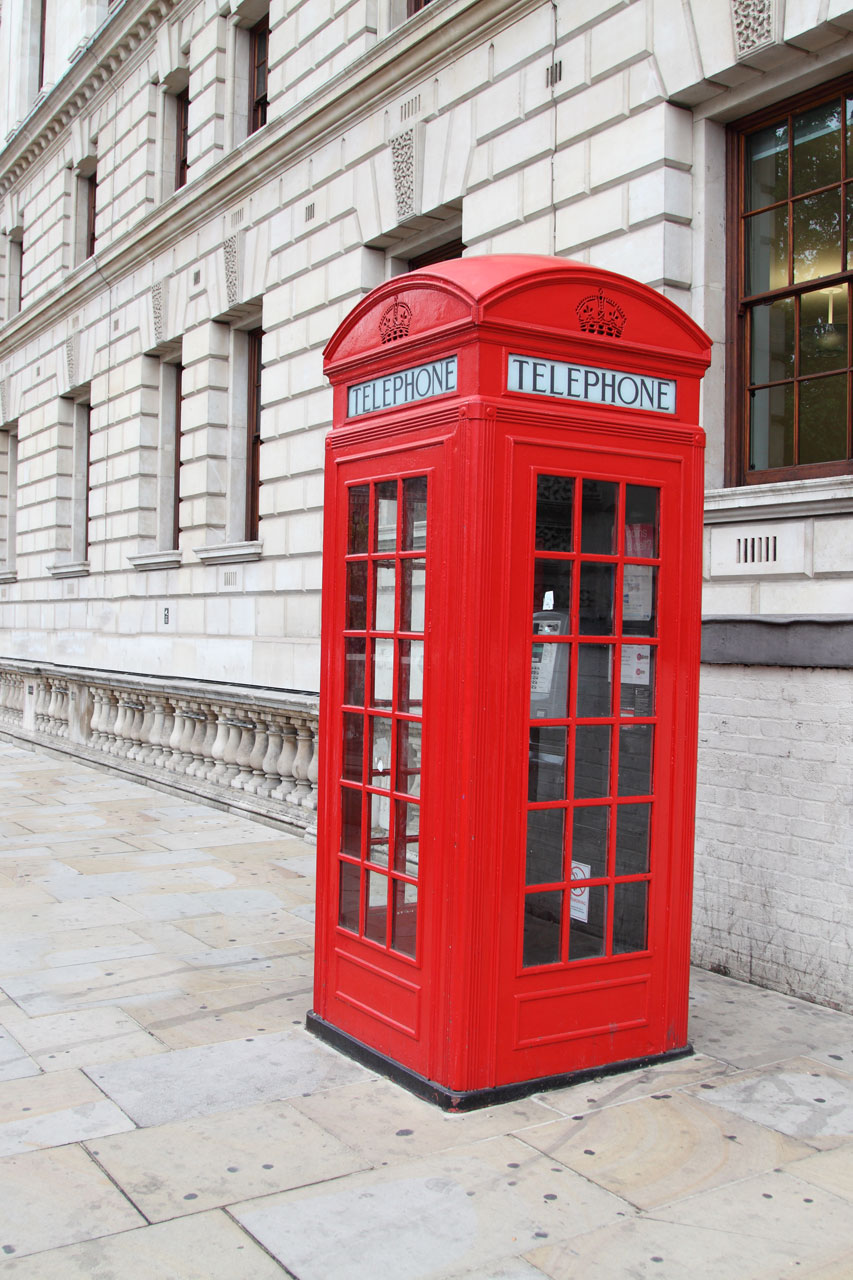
Red phone box

Traditional red telephone booth in london.